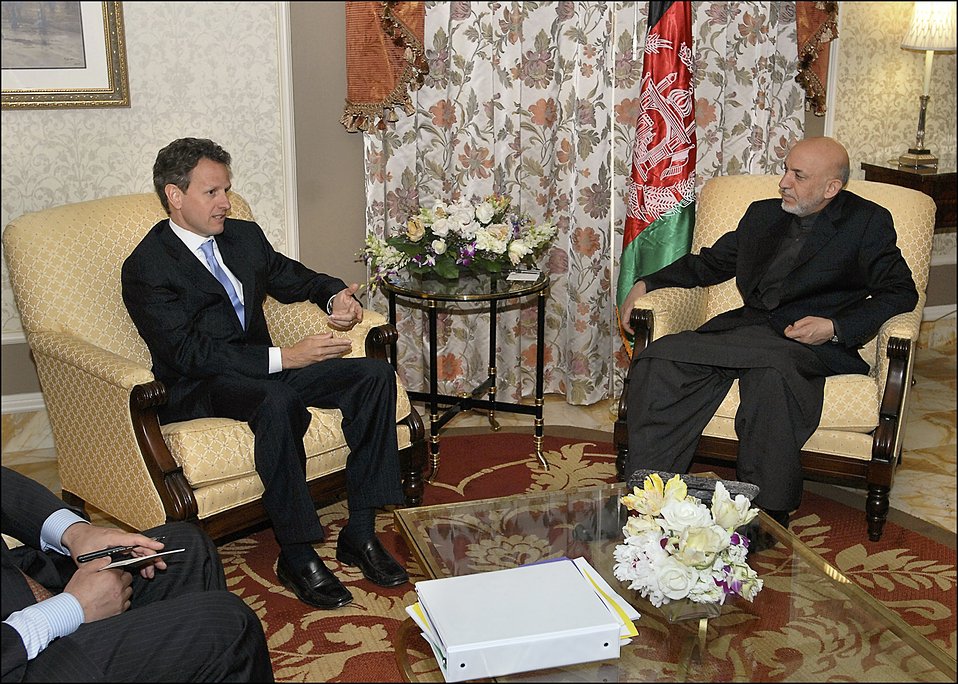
President of Afghanistan Hamid Karzai

On May 11, Secretary Geithner met with President of Afghanistan Hamid Karzai.